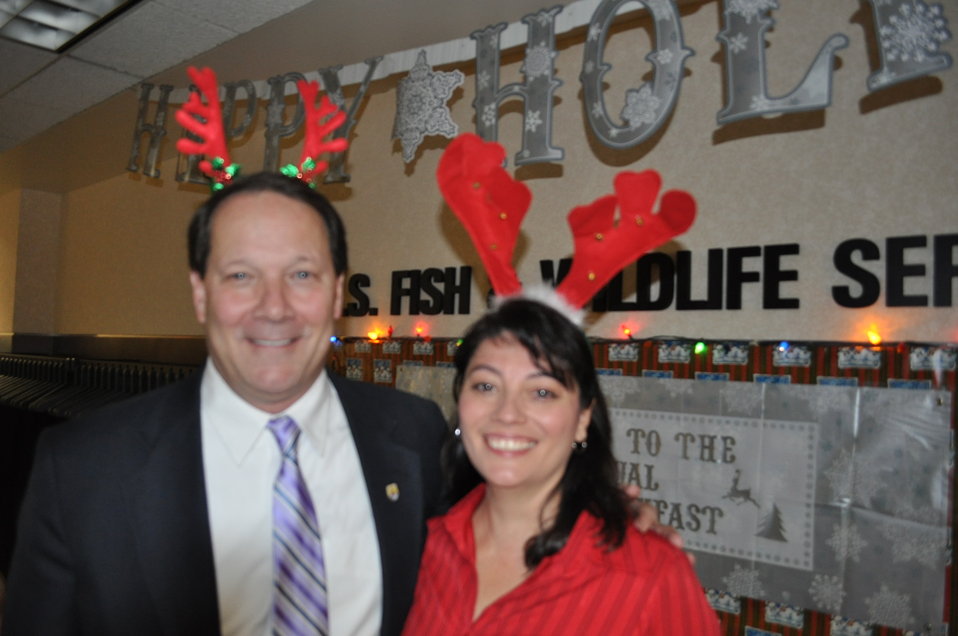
Jim Kurth and Cynthia Martinez